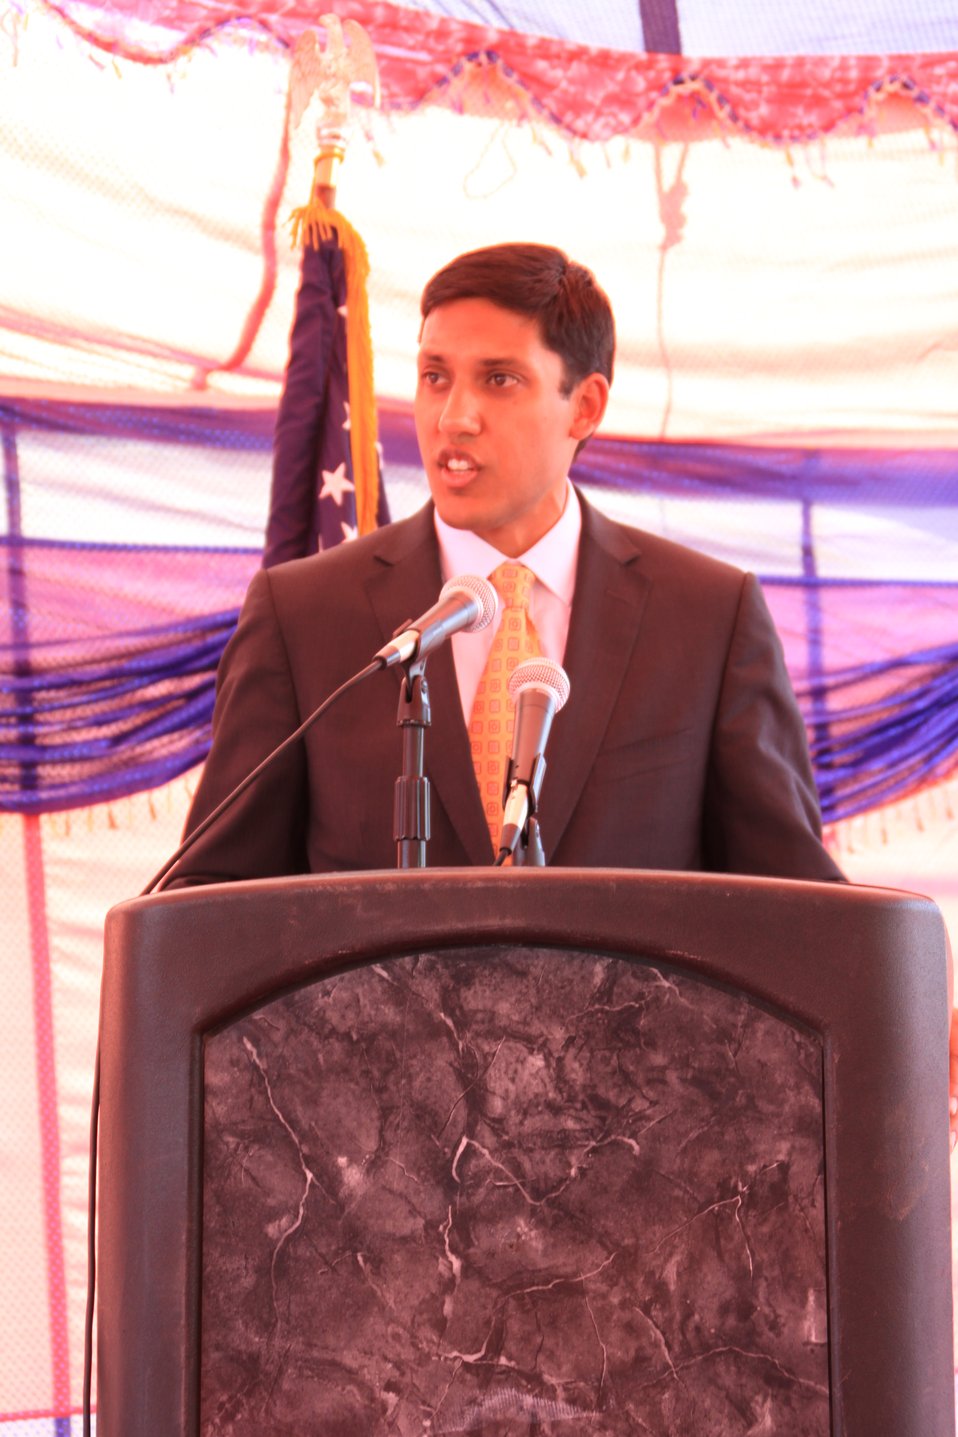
Badam Bagh Farm